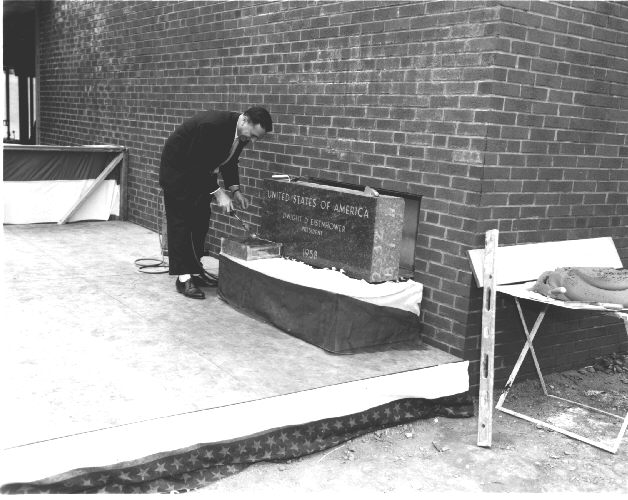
Placement of corner stone for the CDC Clifton Road building, 1959.